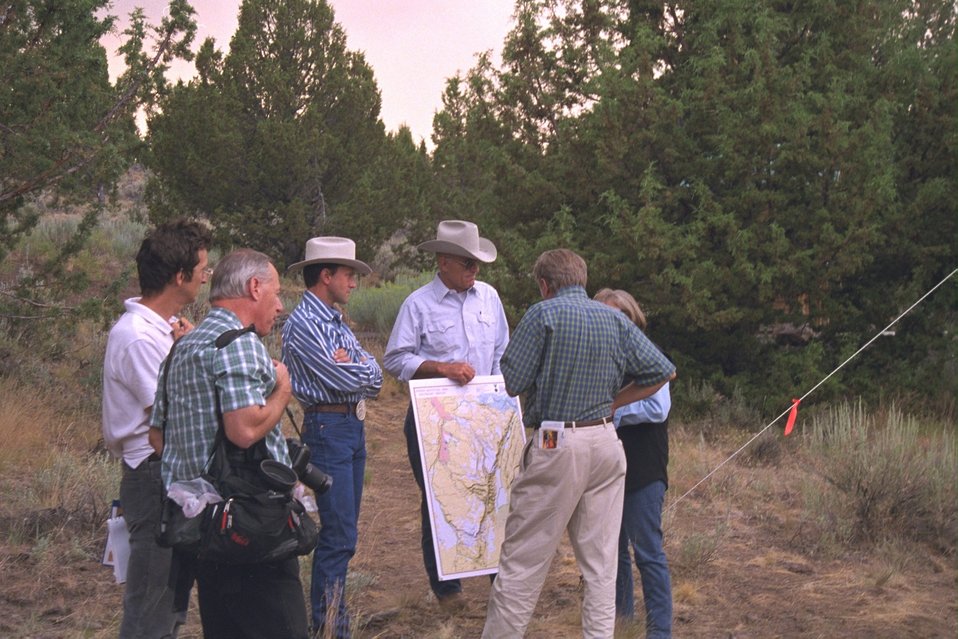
With two reporters on the left, Stacie Davies, Doc Hatfield, Sec. Battie, and Connie Hatfield discuss the Steens designation.